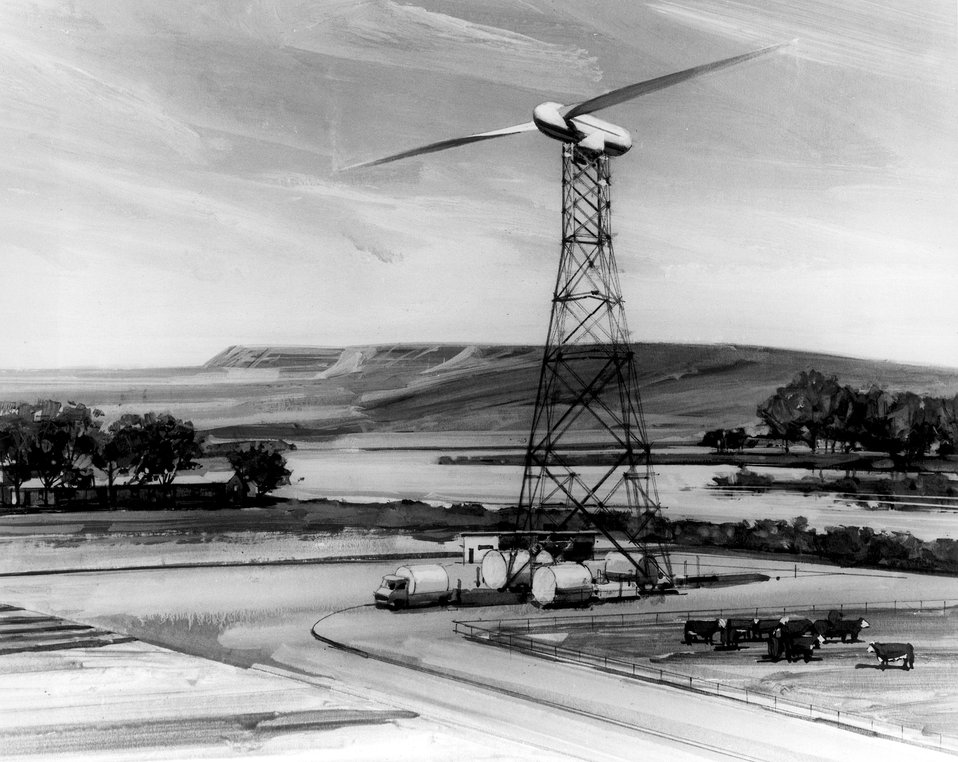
FOR A MORE ABUNDANT HARVEST...A compact, automatic plant powered by a windmill to produce nitrogen fertilizer from air and water, both essentially free resources, is illustrated in this artist's concept. c. 1977